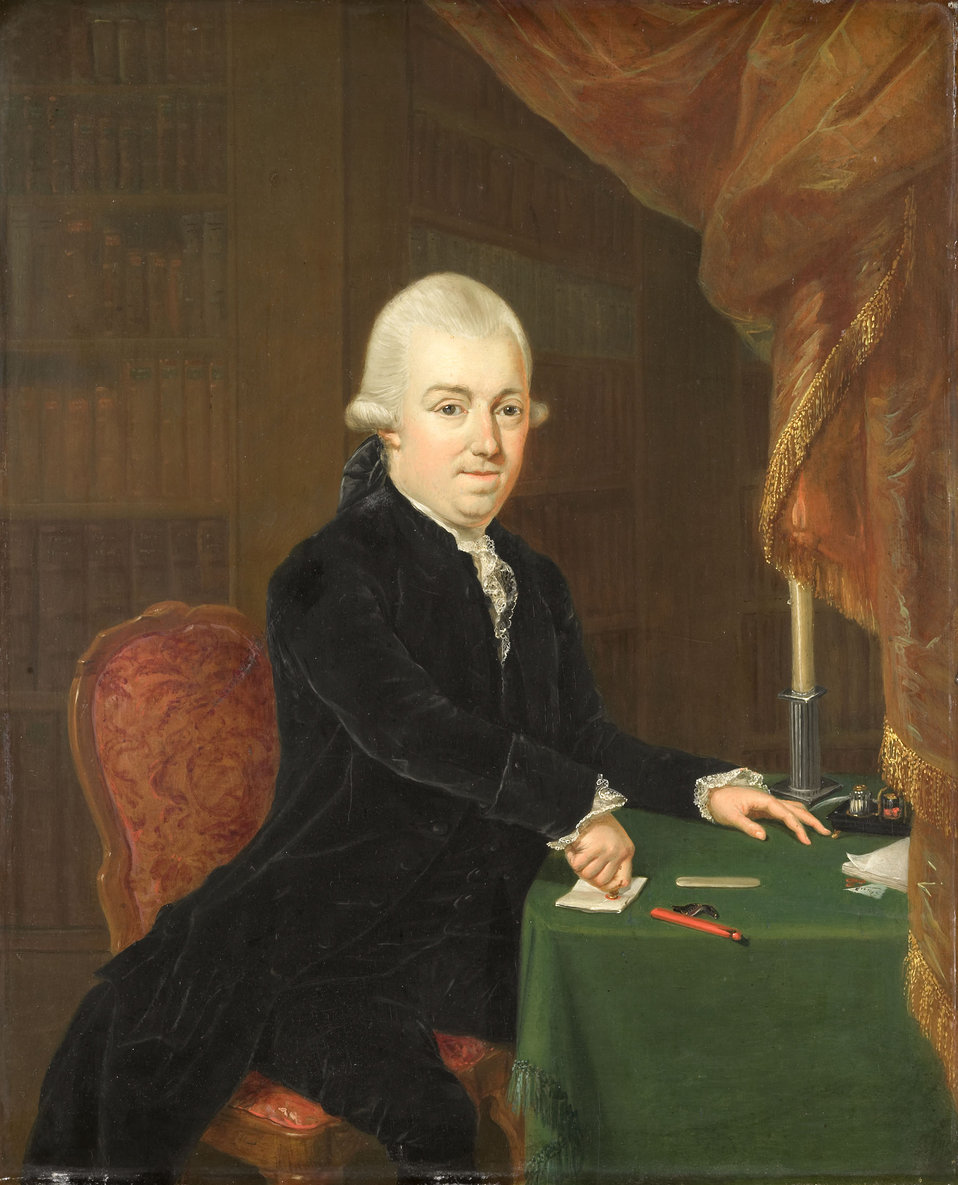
Jan Bernd Bicker